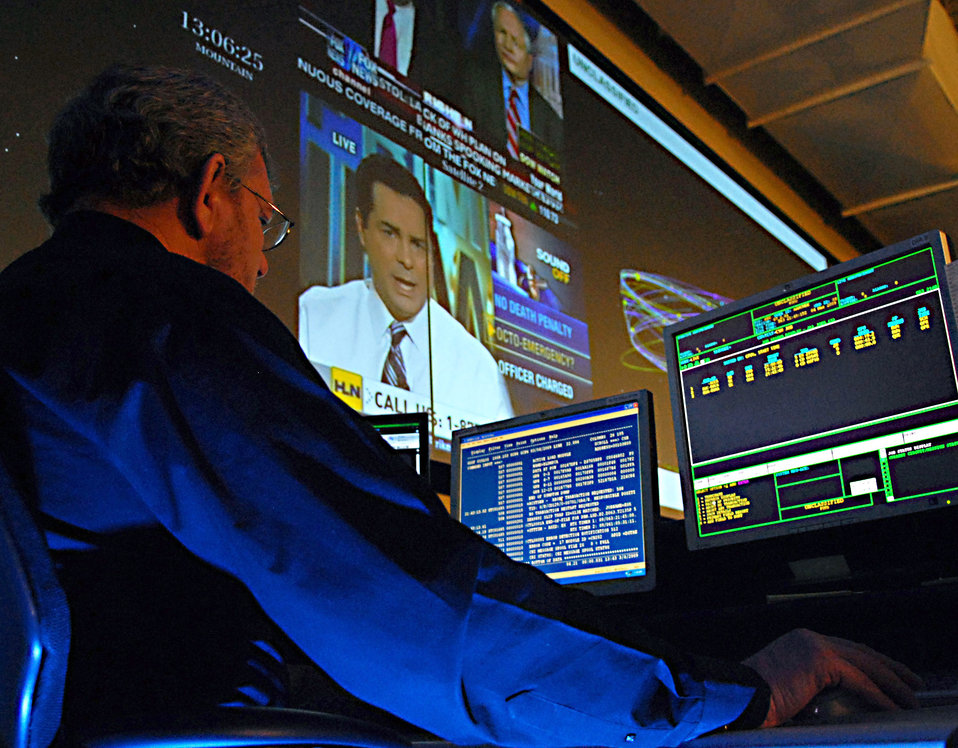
Joint Space Operations Center

Paul McMeekin, a system program analyst at the Joint Space Operations Center at Vandenberg Air Force Base, Calif., reviews data received on the Delta II site there. The purpose of the JSpOC is to provide a focal point for the operational employment of worldwide joint space forces, and enable the commander of Joint Functional Component Command Space to integrate space power into global military operations.